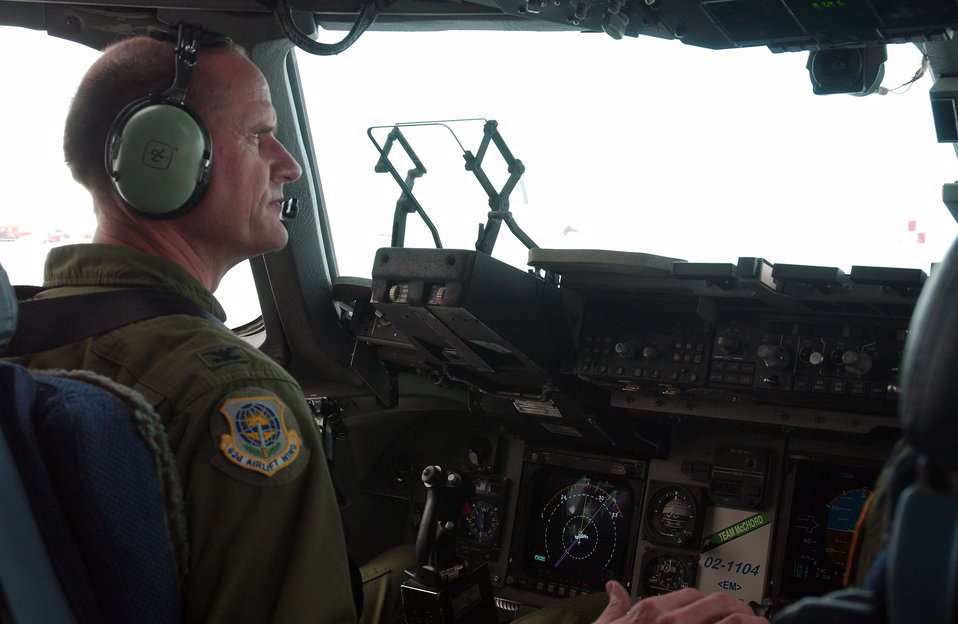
McChord Airmen fuel Operation Deep Freeze

Col. Jeffrey Stephenson prepares to take off on a C-17 Globemaster III from the Pegasus ice runway, Antarctica, to Christchurch, New Zealand, during an Operation Deep Freeze mission Dec. 4. Colonel Stephenson is the 62nd Airlift Wing commander from McChord Air Force Base, Wash.